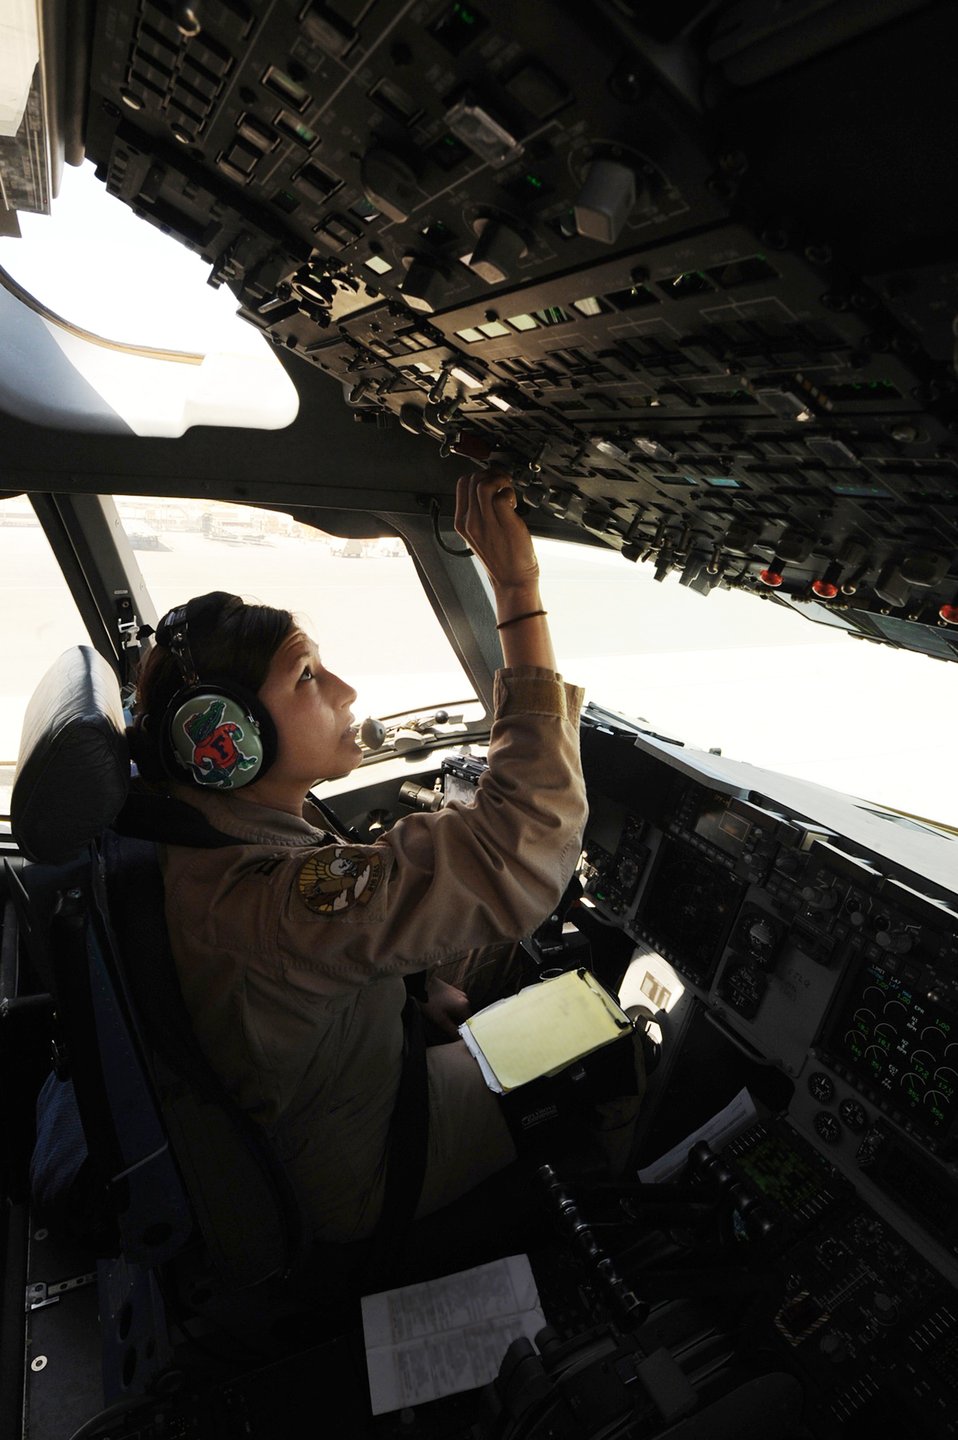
C-17 flight commemorates Women's History Month

Capt. Angela Kimler, 816th Expeditionary Airlift Squadron pilot, conducts post-flight operations on a C-17 Globemaster III at an air base in Southwest Asia March 10, 2010. Captain Kimler was the aircraft commander during a flight with an all-female crew in honor of Women's History Month and is deployed from the 14th Airlift Squadron at Charleston Air Force Base, S.C.